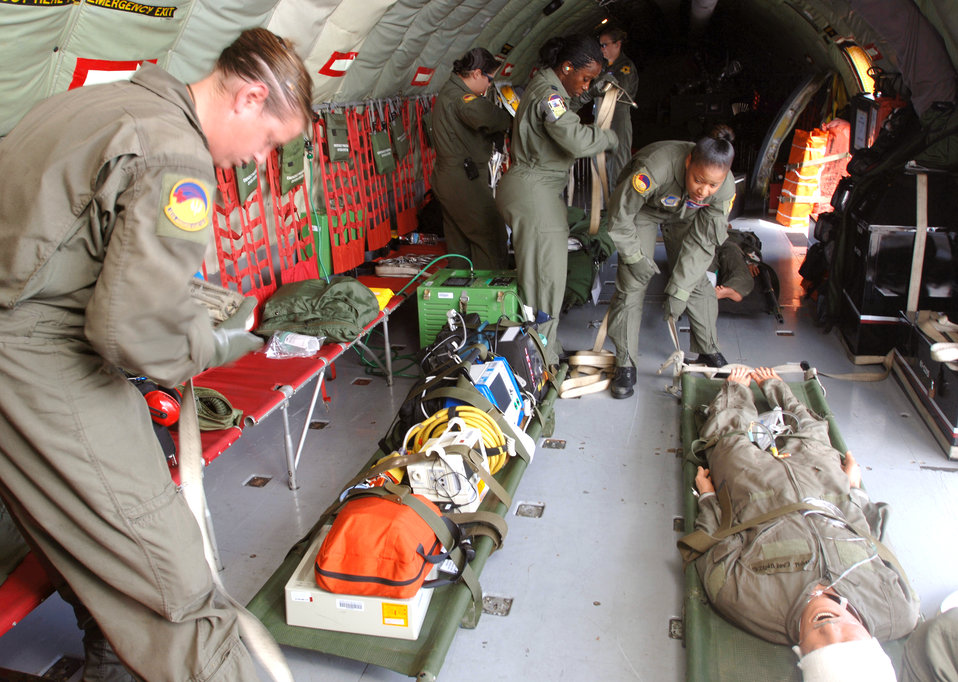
Kadena medics gain knowledge while deployed

KADENA AIR BASE, Japan -- Airmen with the 18th Aeromedical Evacuation Squadron set up patient support pallets inside a KC-135 Stratotanker during a training mission here. During the flight, Airmen used a mannequin to simulate medical scenarios.